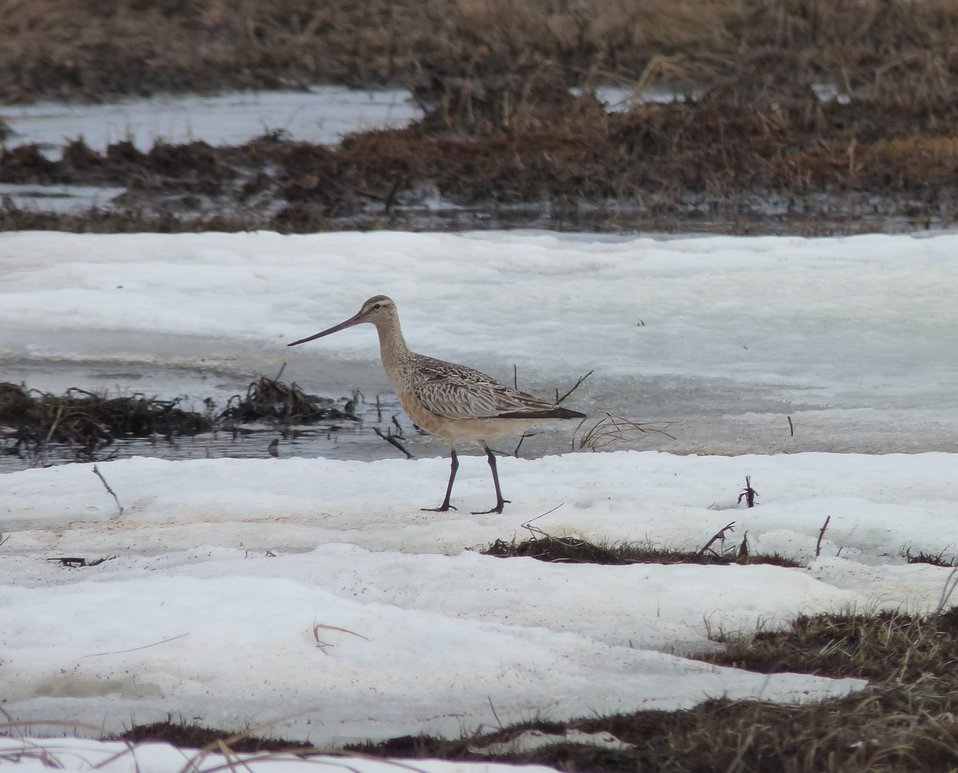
Bar-tailed Godwit

Andreafsky wilderness, Yukon Delta National Wildlife Refuge